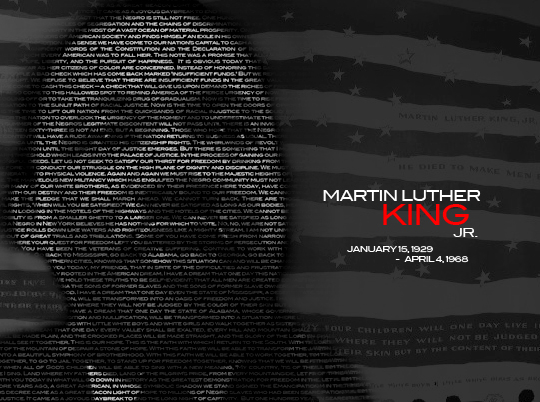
Martin Luther King Jr. Birthday